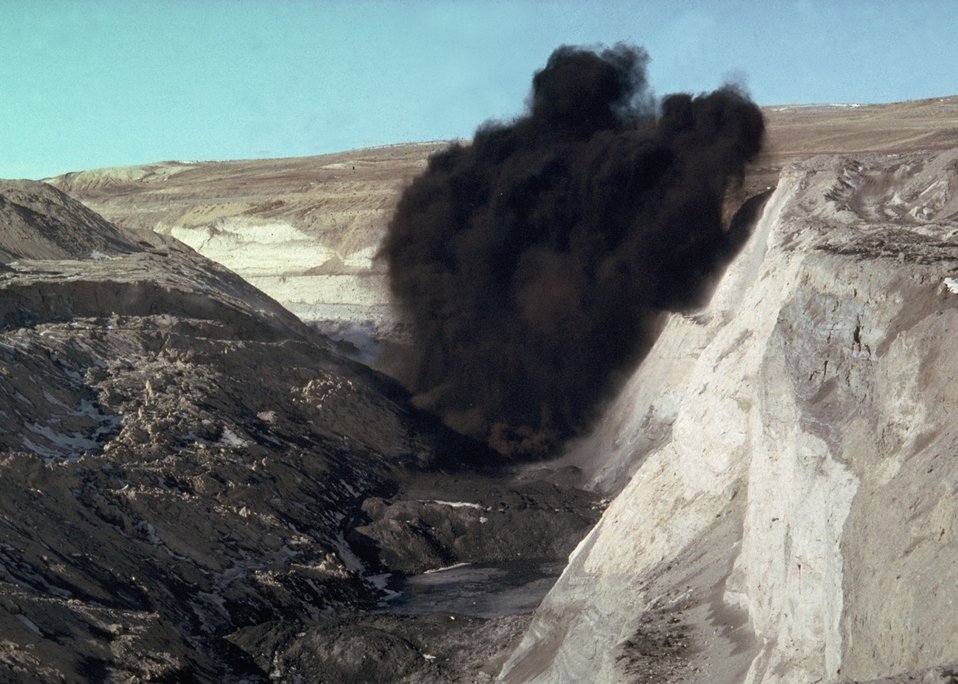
Coal bed methane development.